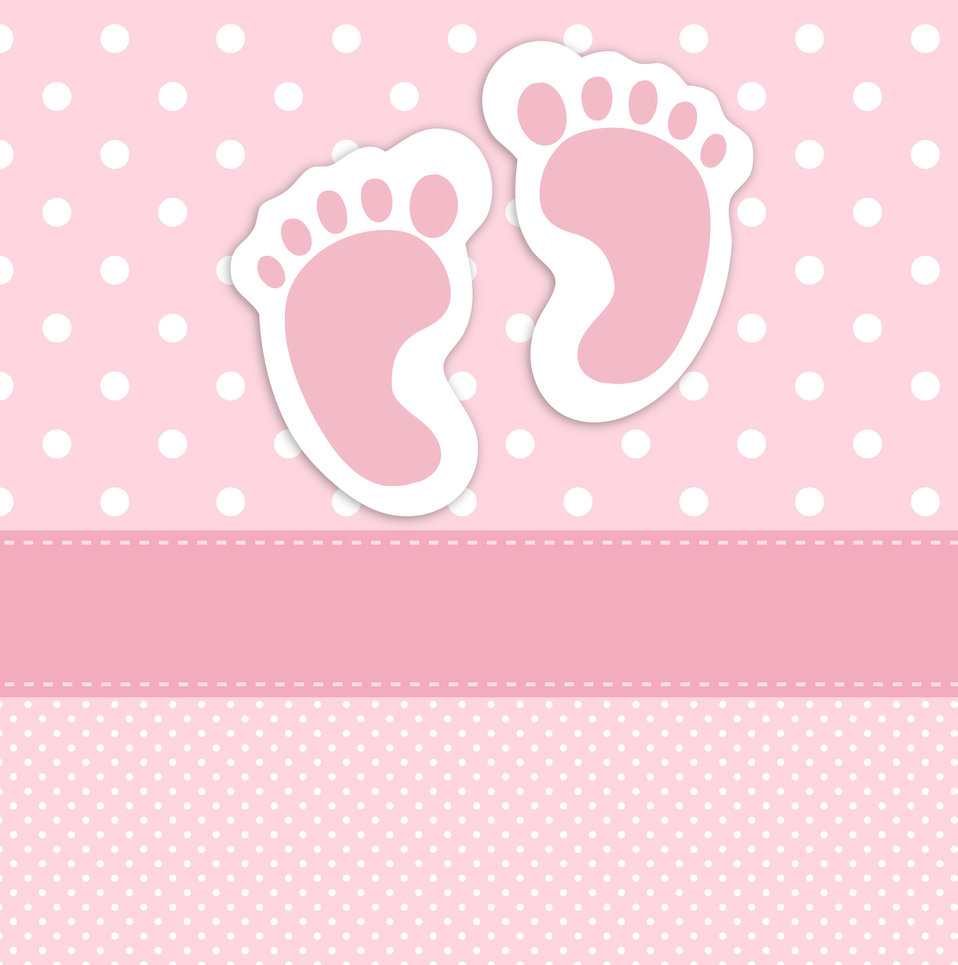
Baby footprints card template

Pink polka dots baby girl footprints card template for scrapbooking.